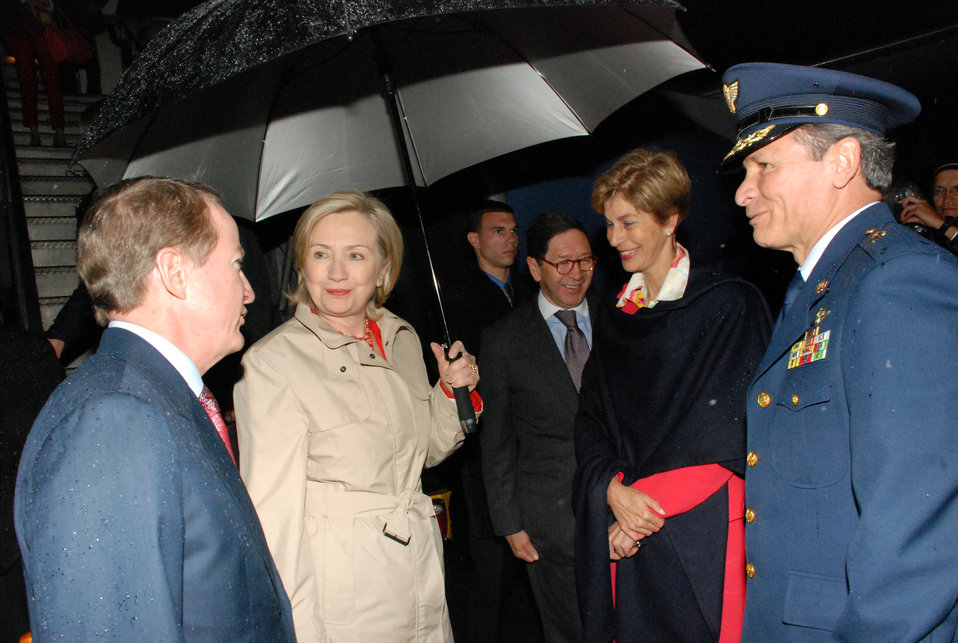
Secretary Clinton Arrives in Colombia

U.S. Secretary of State Hillary Rodham Clinton is accompanied by U.S. Ambassador to Colombia William R. Brownfield and Colombian Ambassador Carolina Barco as she arrives at CATAM airport in Bogotá Colombia June 8, 2010.